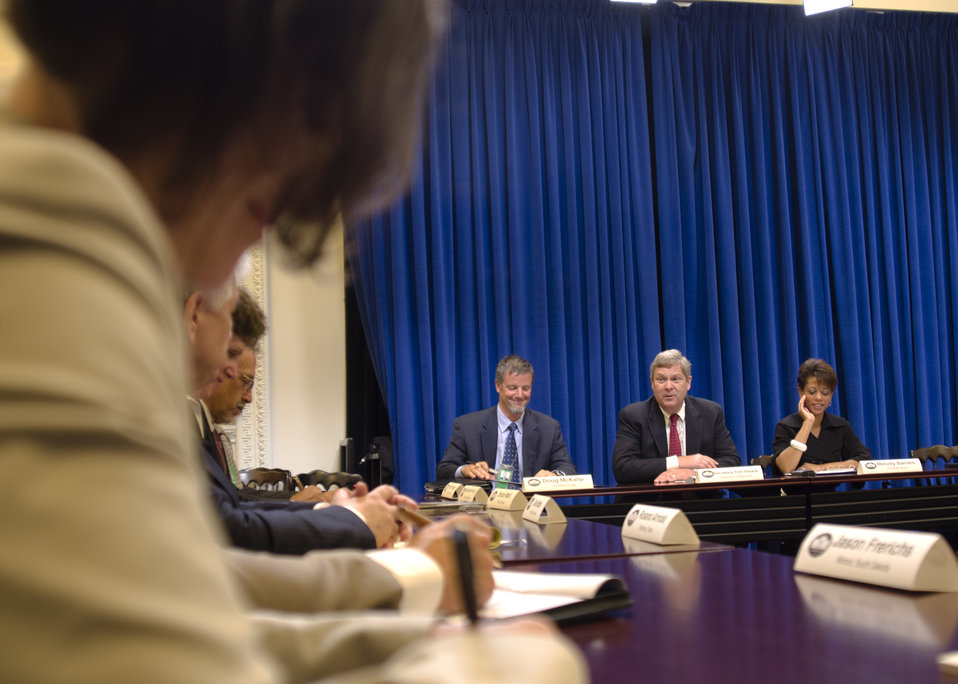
On Wednesday, Jul. 6, 2011, Agriculture Secretary Tom Vilsack attended a meeting at the White House in Washington, DC, with President Barack Obama, the President's Domestic Policy Adviser Melody Barnes and rural communities leaders from across the country for the White House Rural Champions of Change event. The purpose of this meeting is to strengthen rural communities and promote economic growth. Prior to coming here, they were posed with a question about, what should/should not the government be doing to strengthen rural communities and promote economic growth.